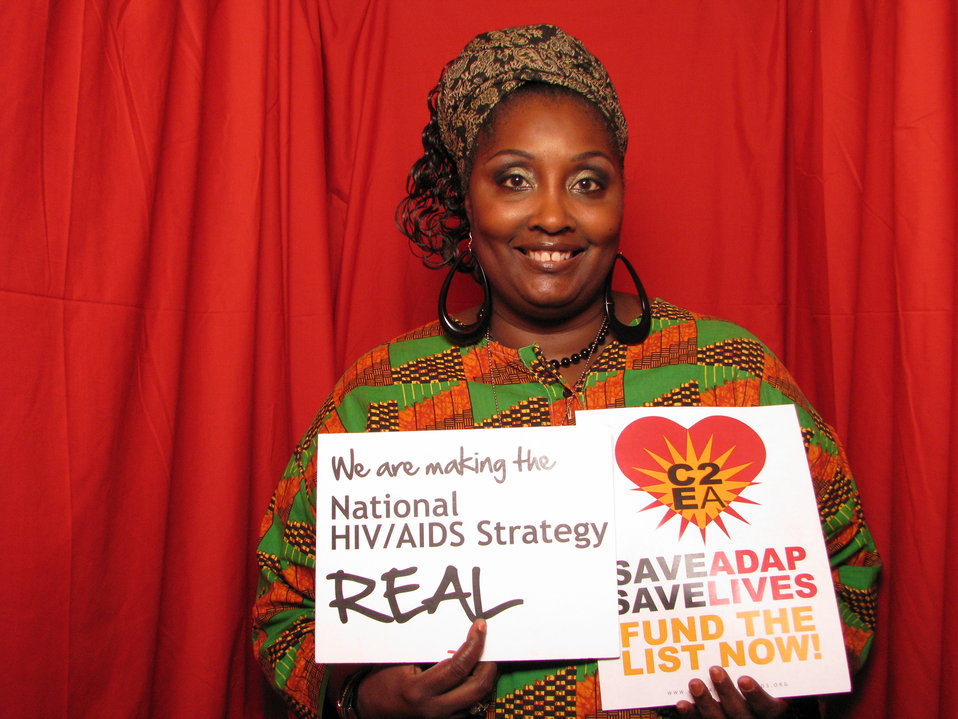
We Are Making the National HIV/AIDS Strategy REAL. Save ADAP, Save Lives, Fund the List NOW!

From the AIDS.gov photo booth at the U.S. Conference on AIDS, September 2010 (Orlando, FL).